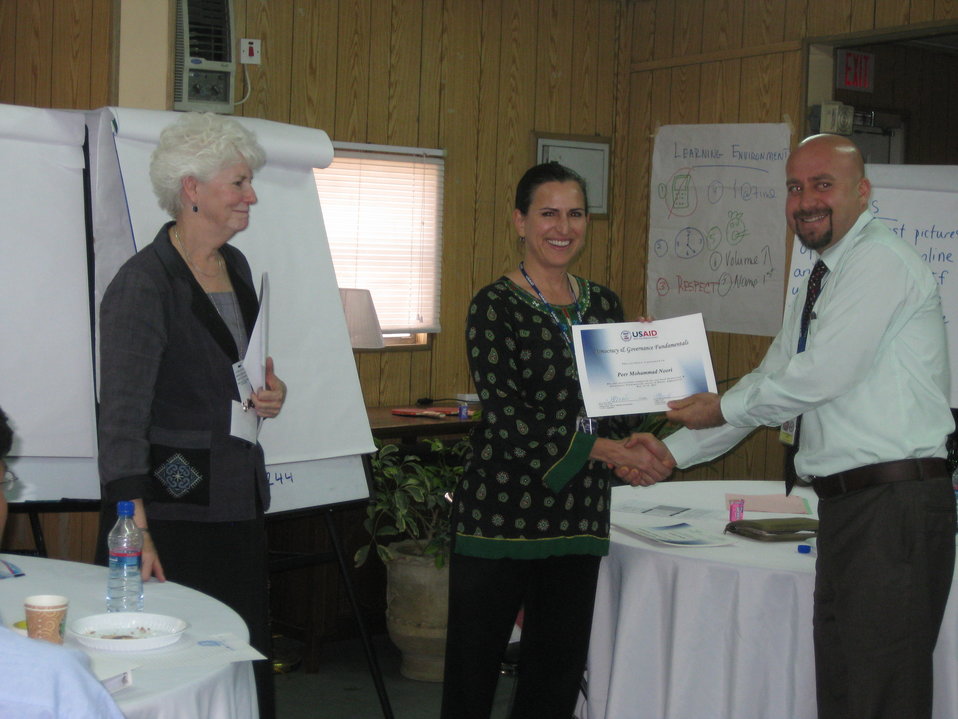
Afghan Youth Voices 061